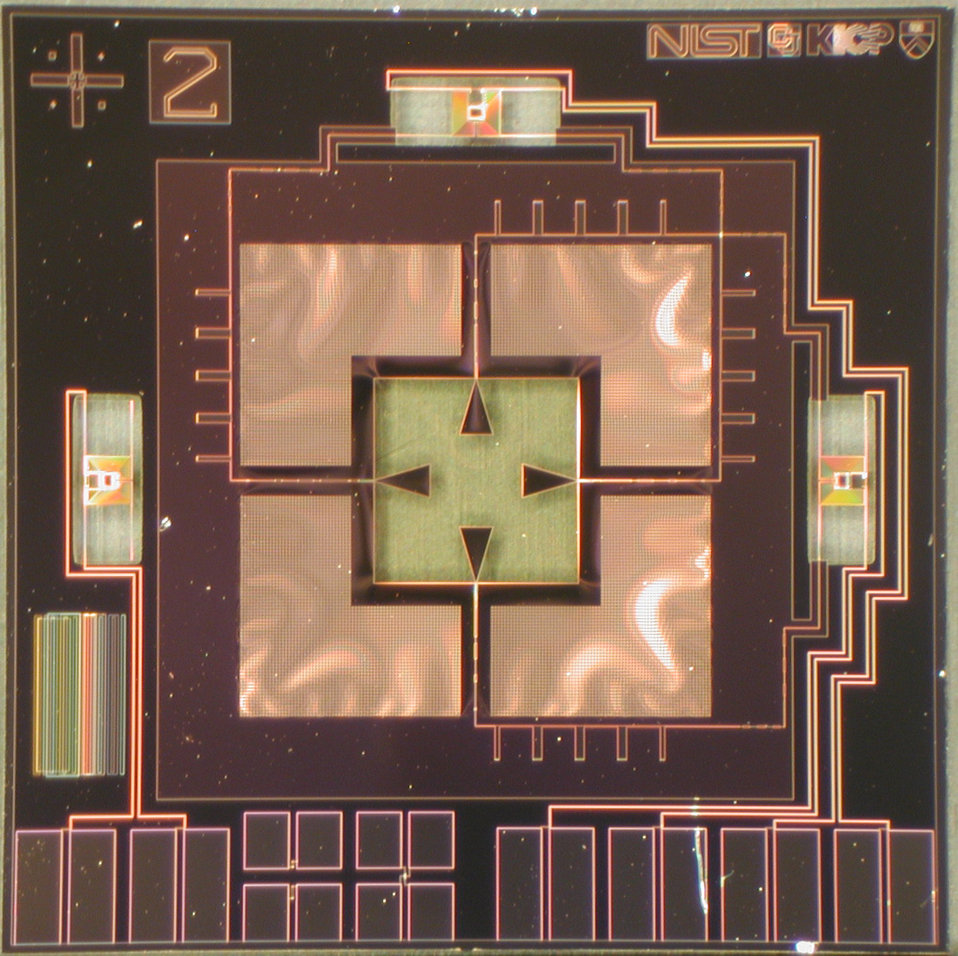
Microwave Detectors; Sensors

Micrograph of a prototype NIST detector that will be used to seek B-mode polarization, the signature of the rapid inflation of the universe after the Big Bang. Cosmic radiation will be received by the arrow-shaped antennas in the middle of the detector. The antennas separate the radiation into two different polarization directions at a frequency of 145 gigahertz. (All light has two polarization directions.) Finally, the radiation for each polarization will be converted to heat by transition-edge sensors (top and right sides of the image), which precisely measure the energy using a superconducting metal that changes resistance in response to heat. The resulting data will be mapped to identify the polarization patterns.